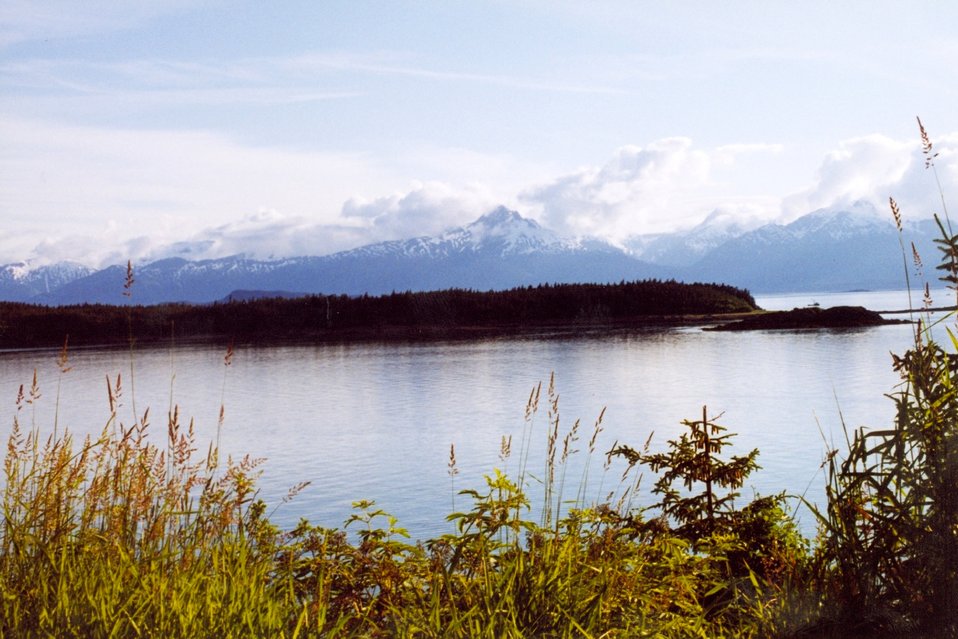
A placid bay in Southeast Alaska